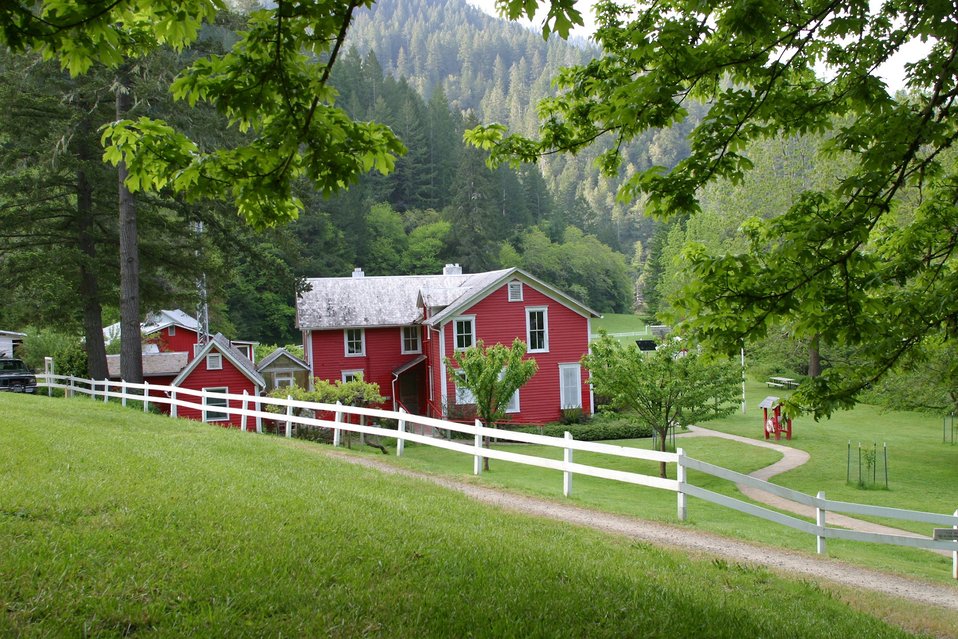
Wild section of the Rogue River from Grave Creek to Foster Bar May 19 to May 22.